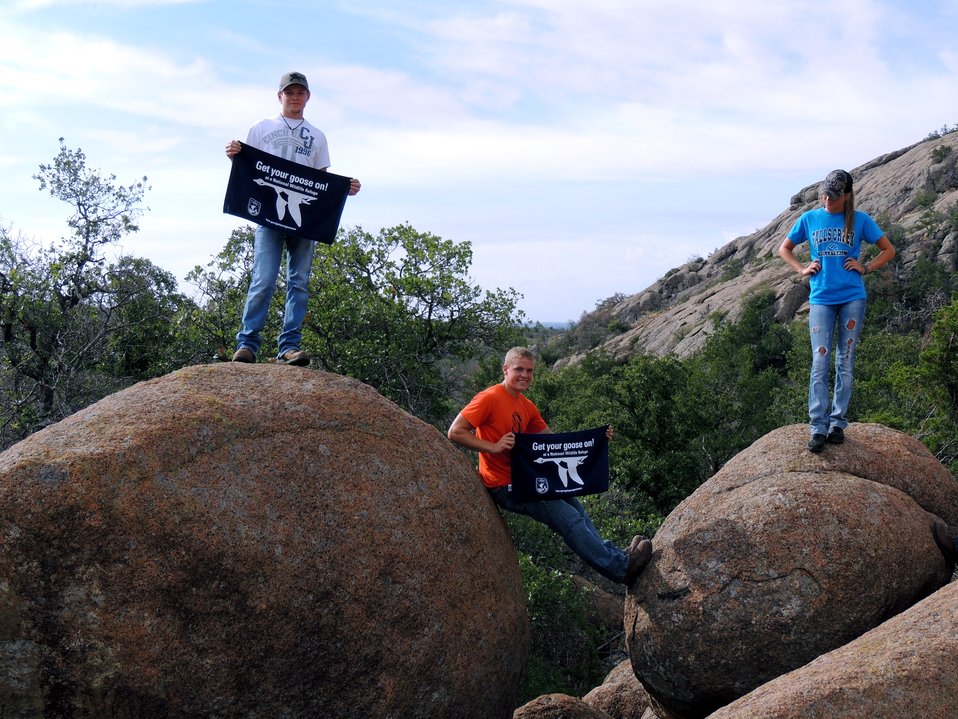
Get Your Goose On!

Wichita Mountains National Wildlife Refuge in Oklahoma.